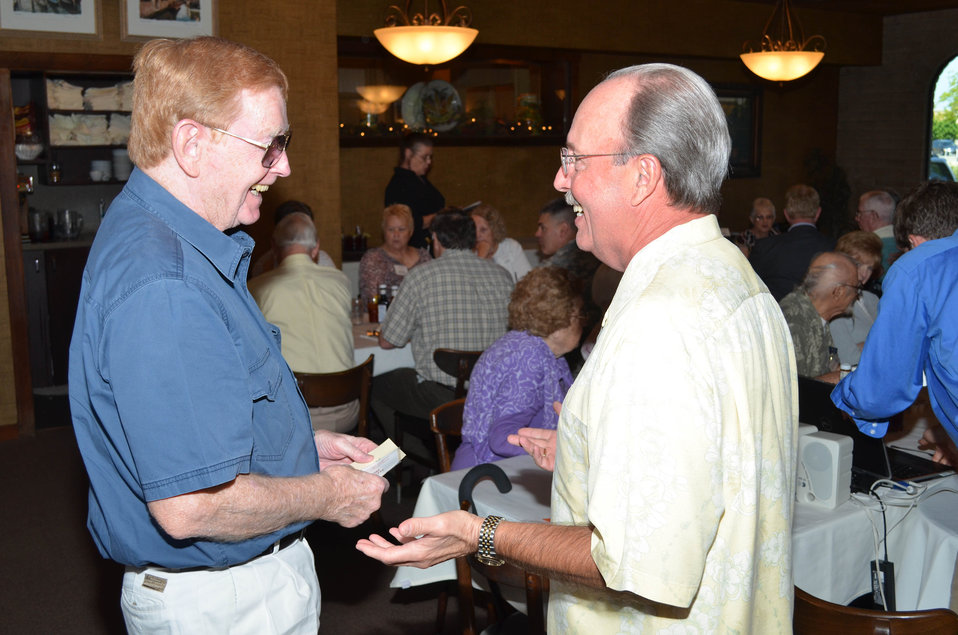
32nd annual retiree luncheon

Retired U.S. Army Corps of Engineers Sacramento District employees Jim Smith (left) and Johnnie Mack talk with each other before the district’s 32nd annual retiree luncheon at Club Pheasant in West Sacramento, Calif., May 23, 2013. The luncheon allows retired members to keep in touch and stay up to date on what the district is doing.